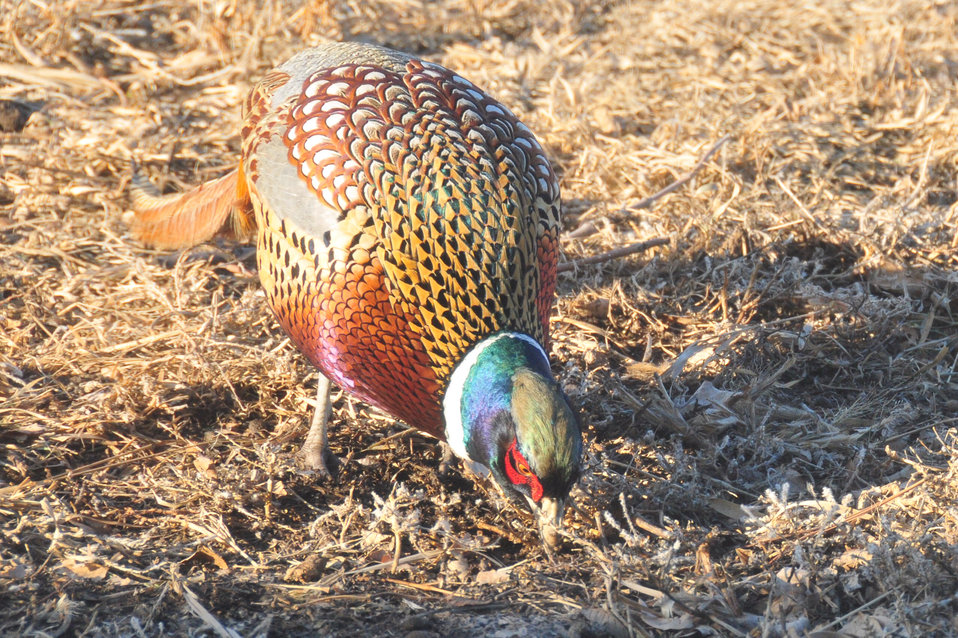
Ring-necked Pheasant on Lacreek NWR 2